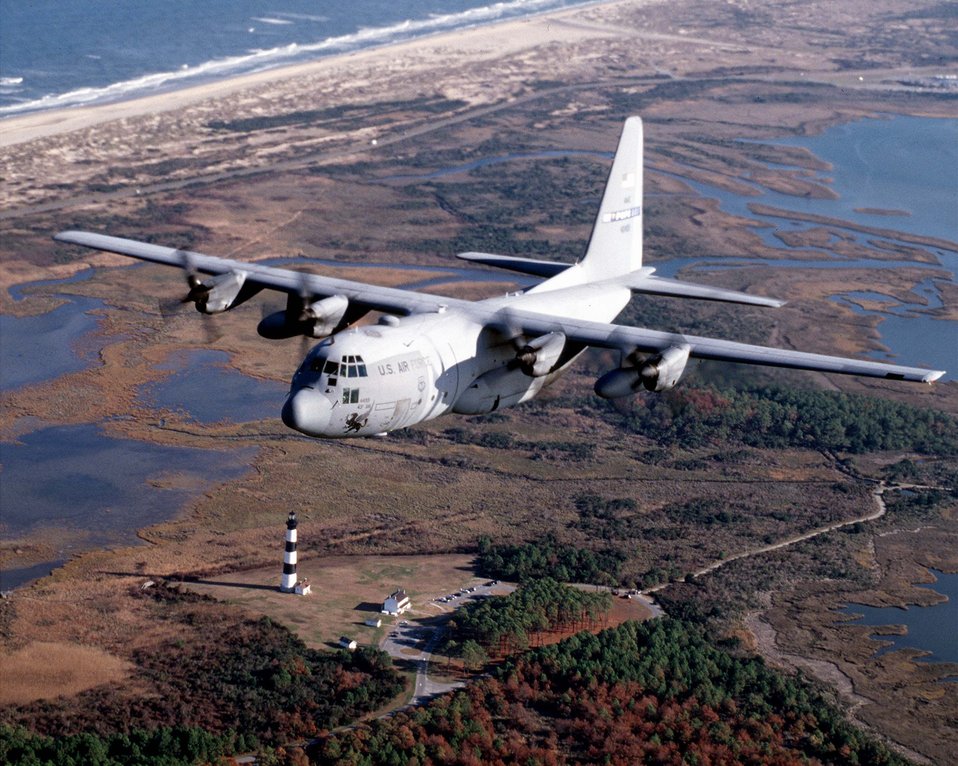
C-130 flight

OVER NORTH CAROLINA -- A C-130 Hercules from the 2nd Airlift Squadron, Pope Air Force Base, N.C. flies over the Bodie Island lighthouse on the North Carolina coast.